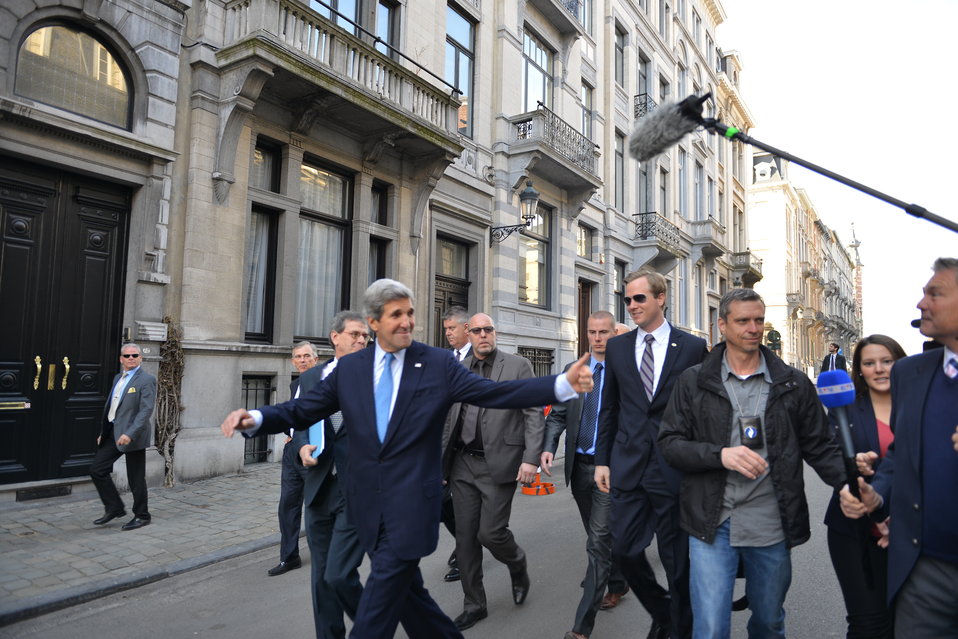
Secretary Kerry Speaks With a Belgian TV Reporter

U.S. Secretary of State John Kerry takes a question from Belgian TV on his way to Egmont Palace in Brussels, Belgium, on April 24, 2013.